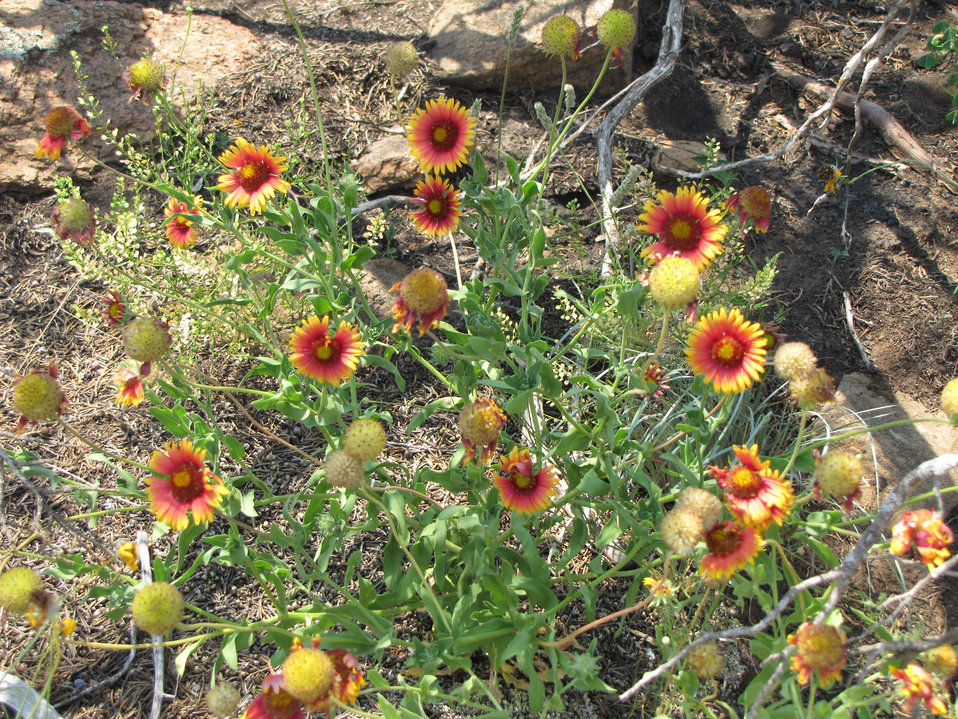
Indian blanket2, gaillardia pulchella,

Wildflowers at Wichita Mountains Wildlife Refuge in Oklahoma.